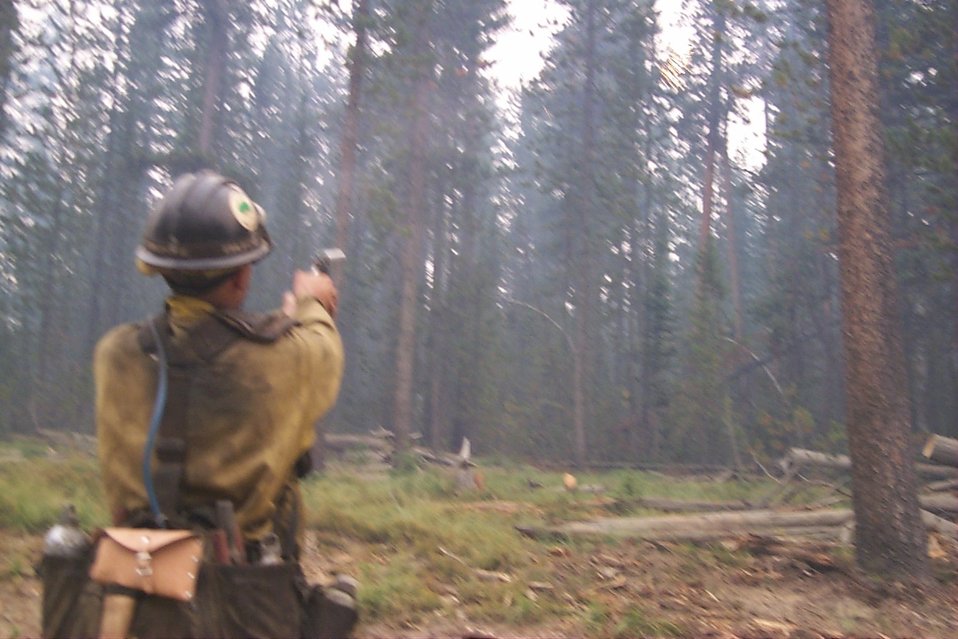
Controlled burn with a flare gun Fire Clearwater Fire Salmon Field Office USRD Upper Snake River District